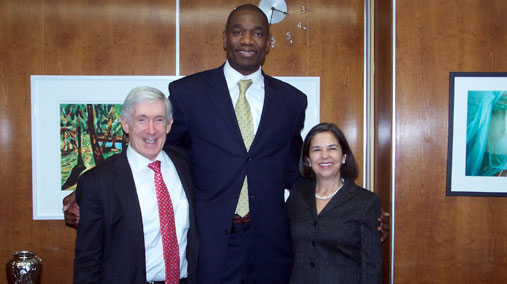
Dikembe Mutombo Poses for a Photo With Under Secretaries Hormats and Otero

Former NBA basketball star Dikembe Mutombo poses for a photo with U.S. Under Secretary of State for Economic, Energy and Agricultural Affairs Robert D. Hormats and U.S. Under Secretary of State for Democracy and Global Affairs at the U.S. Department of State in Washington, D.C., on November 15, 2010.